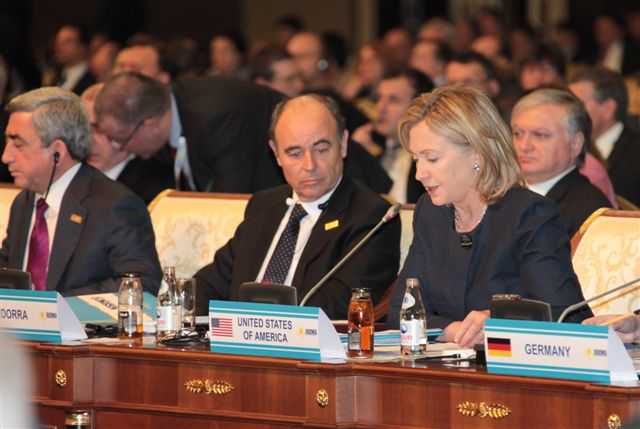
Secretary Clinton Participates in the OSCE Summit Plenary Session

U.S. Secretary of State Hillary Rodham Clinton participates in the OSCE Summit Plenary Session in Astana, Kazakhstan, on December 1, 2010.